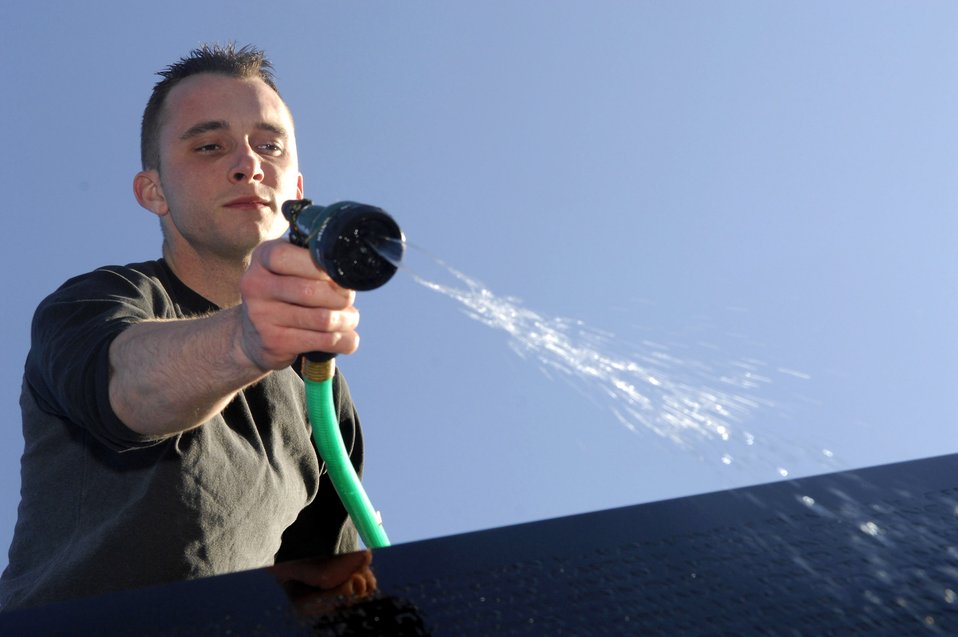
Cleaning the Wall

Senior Airman Travis Fitzgerald cleans the Vietnam Veterans Memorial during a volunteer cleaning project in Washington, D.C., April 21. Members of the Air Force Sergeants Association, with volunteers from Charleston, Shaw, Pope, Seymour Johnson, Langley and Bolling Air Force Bases, were among those who helped in the project. Airman Fitzgerald is assigned to Langley AFB, Va.